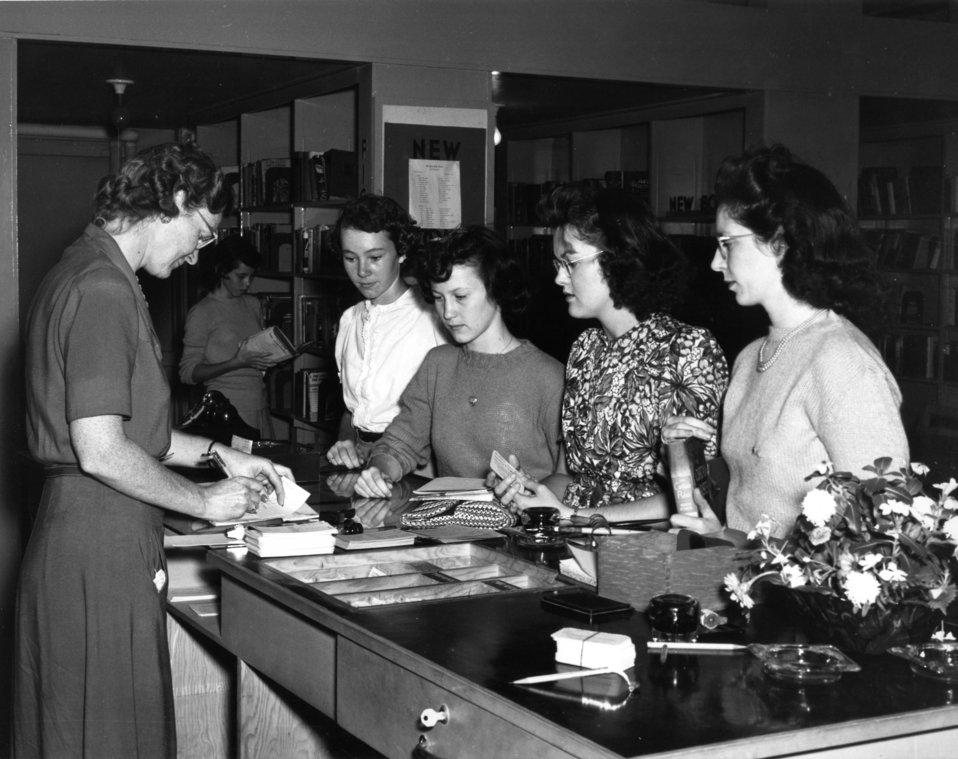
Services at Oak Ridge